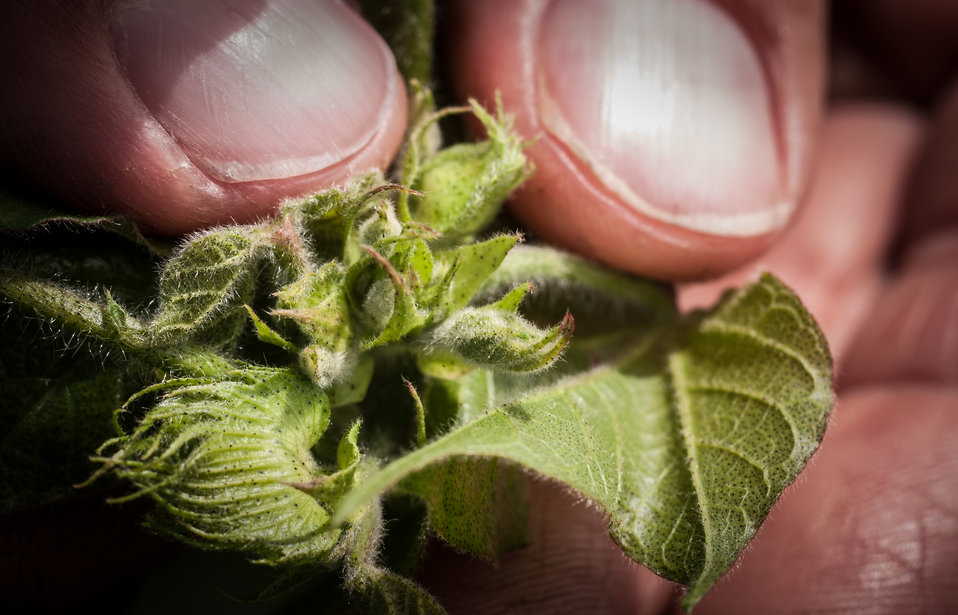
Michael Popp (pronounced Pope) shows cotton plants at various stages of development at Popp Farms 05 El Campo, TX on Jun. 20, 2013. Michael is a junior partner in the 2,400-acre operation, which grows cotton and milo (grain sorghum). The cotton flower starts as a square bud, then a white flower blossoms, turning red, then falls off leaving the boll to grow and eventually opens to reveal the cotton locks, ready to be harvested and processed in a cotton gin. Flowers first occur at the bottom and mature upwards along the plant. The farms are part of the United Agricultural Cooperative, Incorporated.